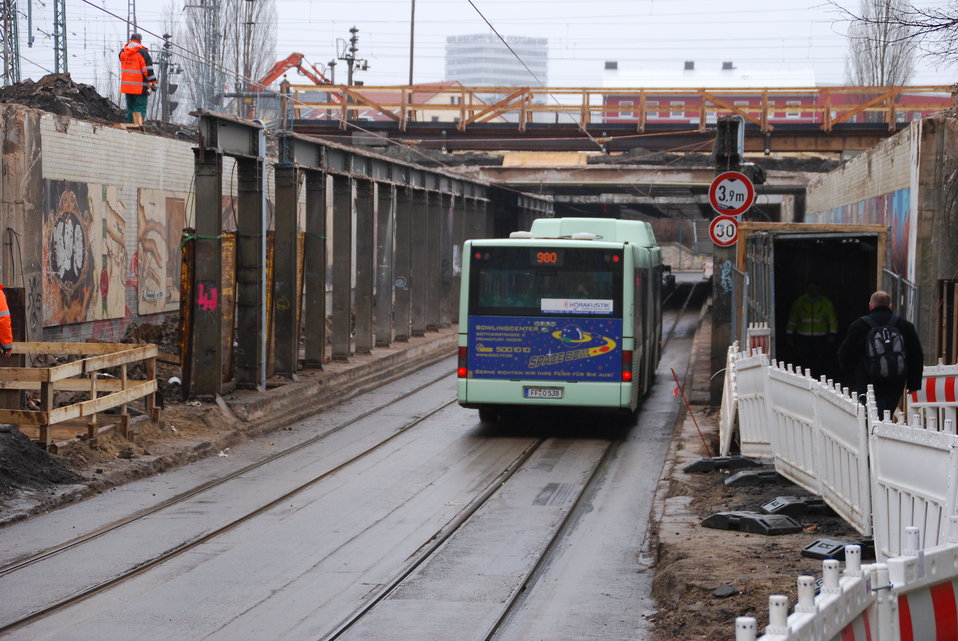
Abriss Bahnhofstunnel Frankfurt (Oder)